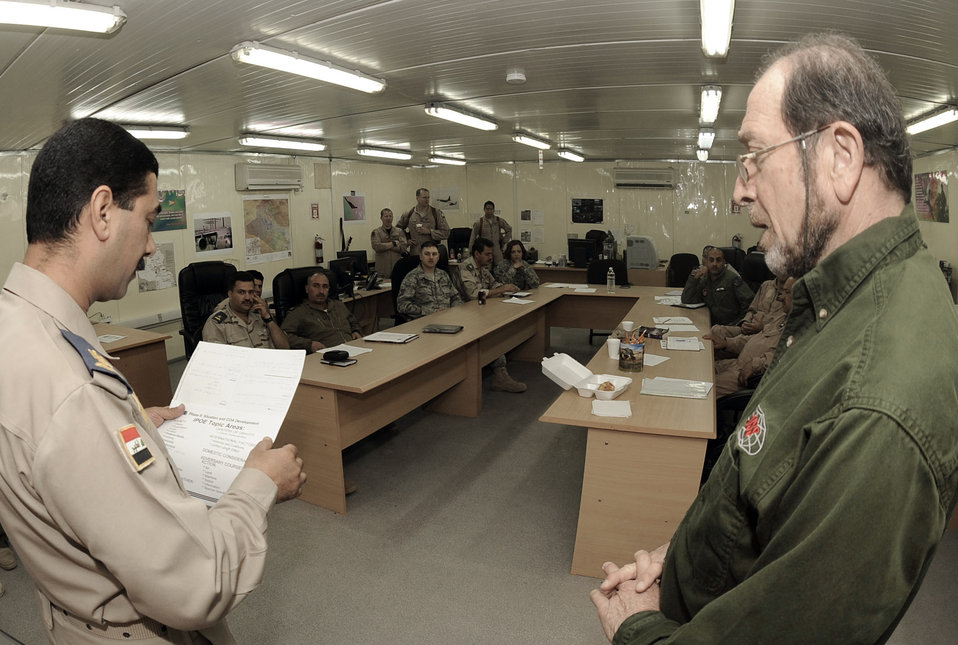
Airmen build Iraqi air operations center capability

Coalition Air Force Training Team Airmen come together to teach the U.S. Joint Air Operations Planning Course to Iraqi airmen April 21 at Camp Victory, Iraq. Ten members of the Iraqi air force learned about planning operational-level air operations, which will further help the Iraqi air force air operations center improve its operational effectiveness.